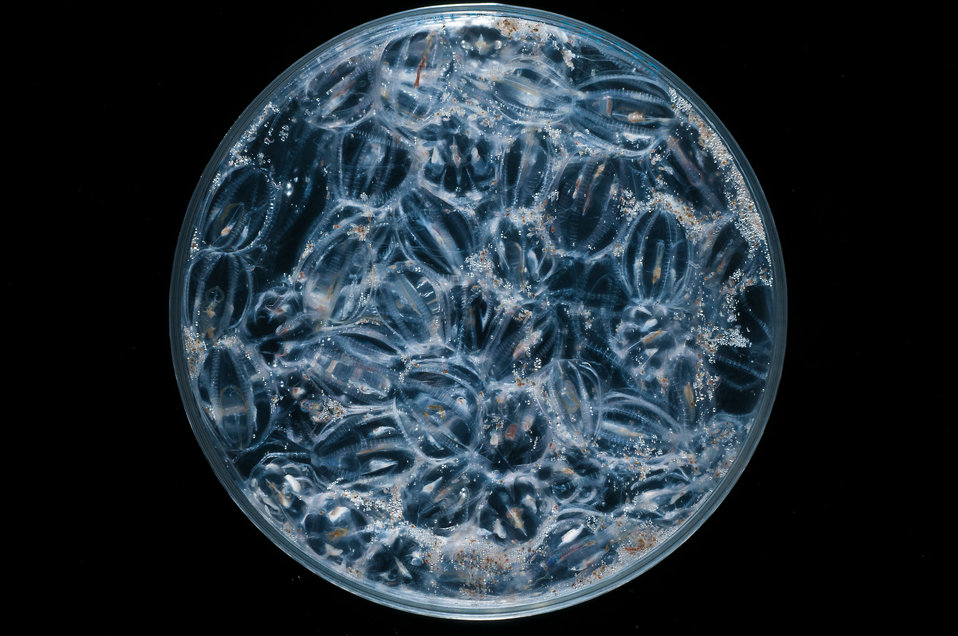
August 9, 2011 Comb jellies and tiny zooplankton!